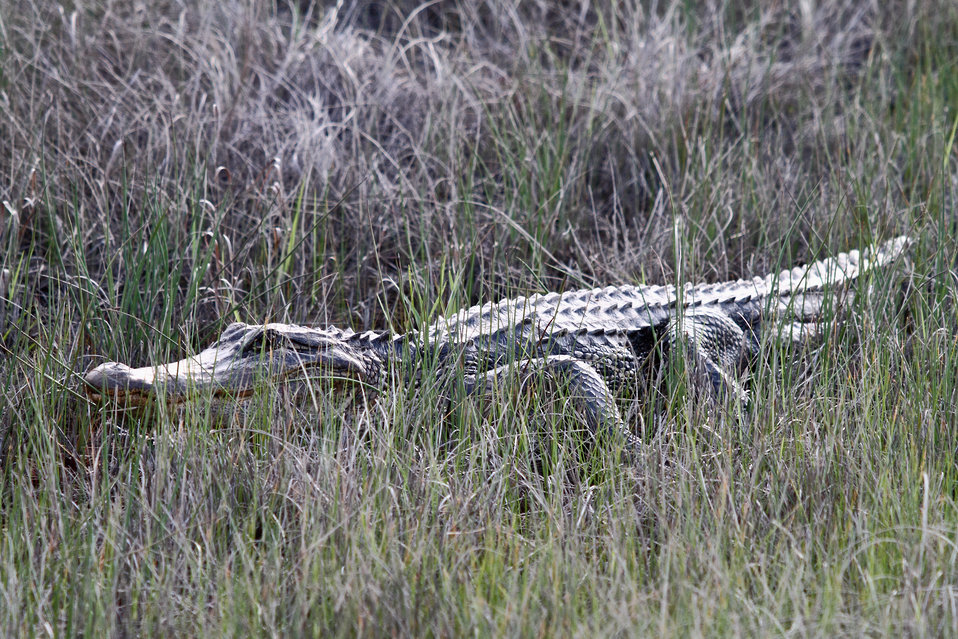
American Alligator hiding